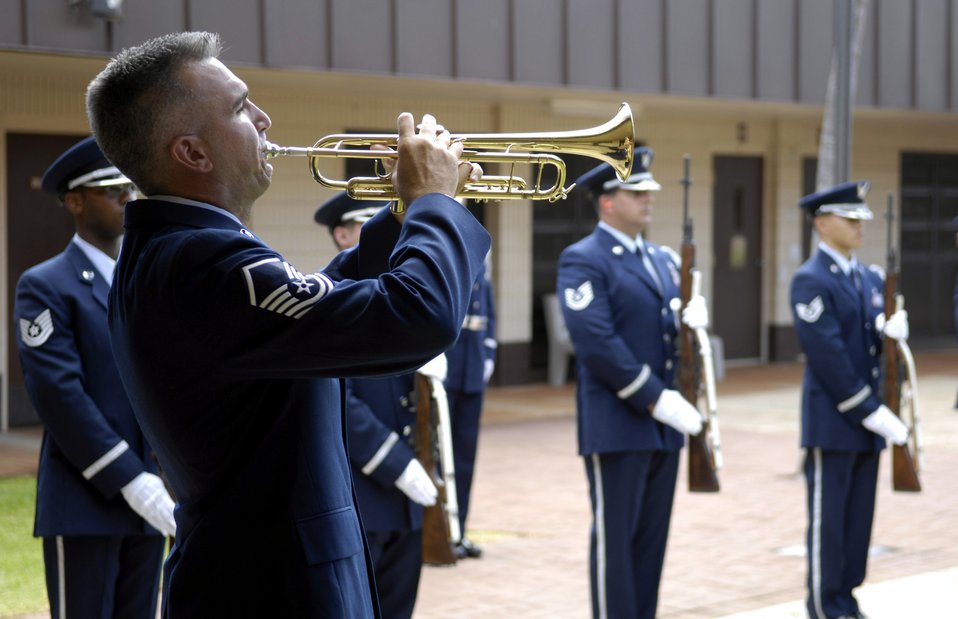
Solemn service

A bugler plays